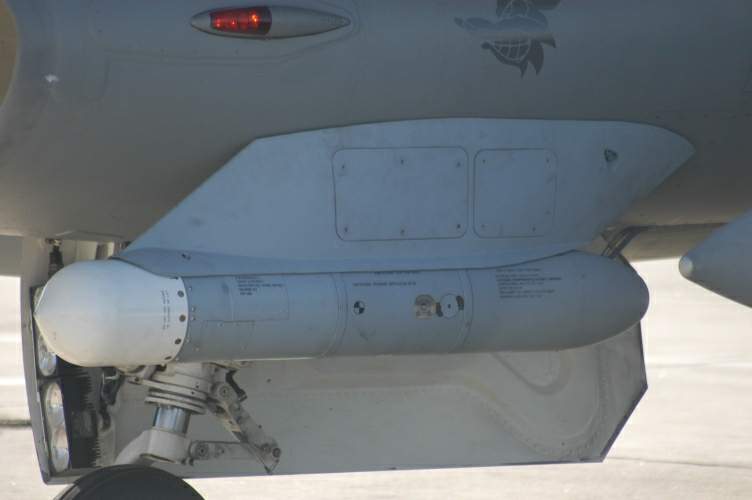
HTS

The High-speed Anti-Radiation Missile Targeting System, or HTS, loaded on the F-16CJ Block 50/52 Fighting Falcon at Langley Air Force Base, Va.